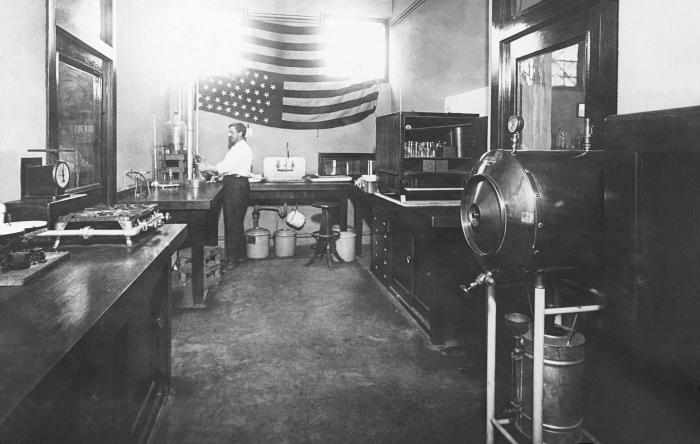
This historic 1914 photograph depicted the interior of what was the media preparation room located in the bacteriological laboratory of the Minneapolis, Minnesota water filtration plant.